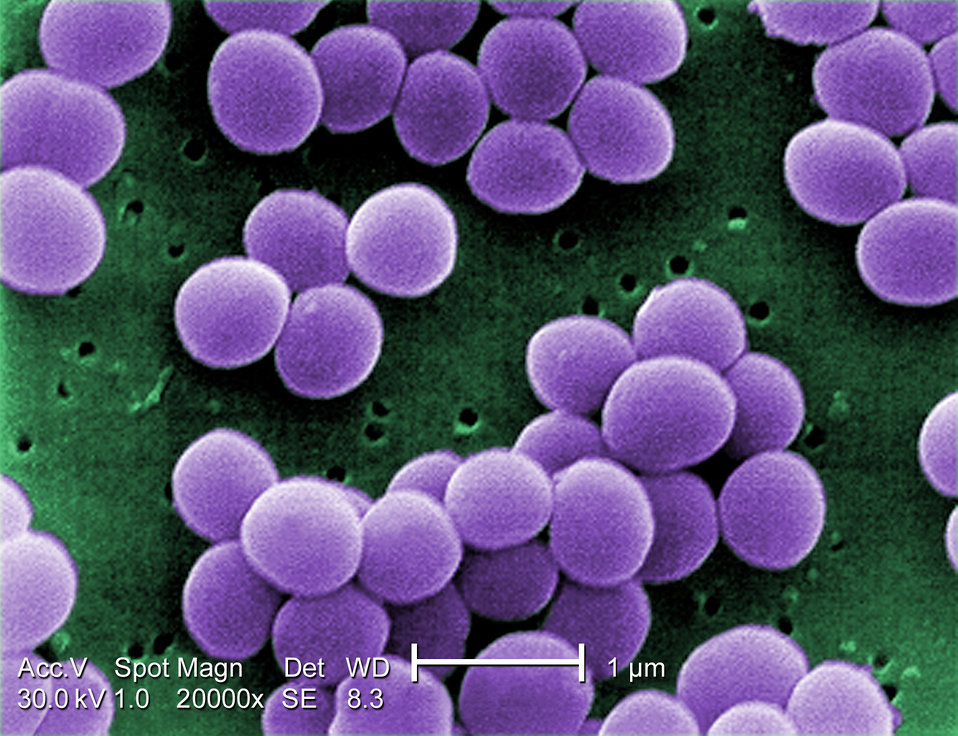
Under a very high magnification of 20,000x, this scanning electron micrograph (SEM) shows a strain of Staphylococcus aureus bacteria taken from a vancomycin intermediate resistant culture (VISA).